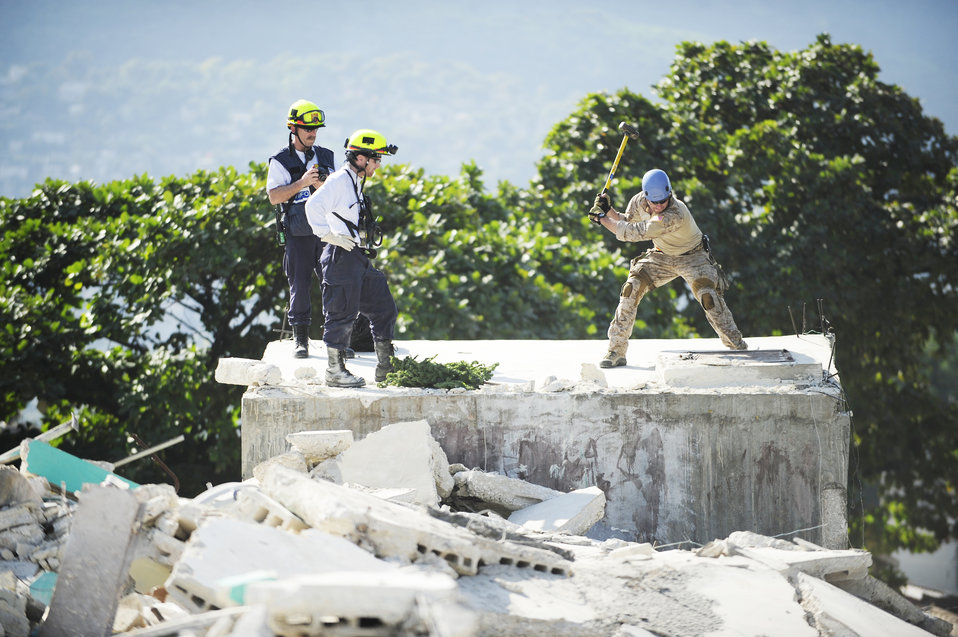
Haiti Earthquake Relief

A pararescueman removes a lock from an access point as members of the Fairfax County Urban Search and Rescue observe during recovery operations Jan. 17, 2010, Port-au-Prince, Haiti. The pararescueman is assigned to the 23rd Special Tactics Squadron at Hurlburt Field, Fla. Department of Defense assets have been dispatched to Haiti to assist with humanitarian assistance and disaster relief after a magnitude 7 earthquake hit the country Jan. 12, 2010.